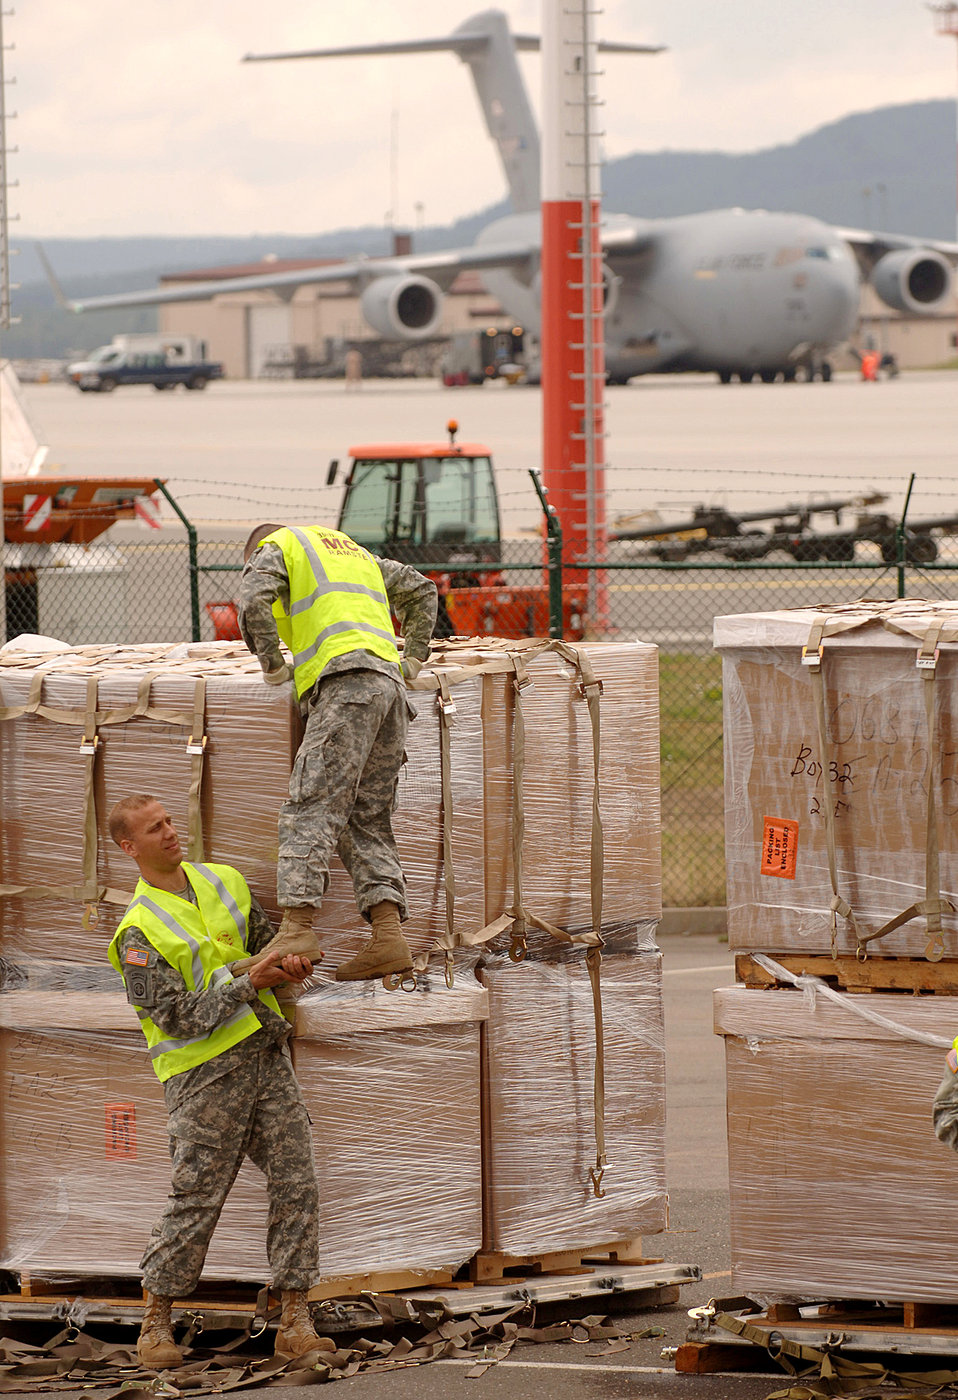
Ramstein members deliver aid to Georgia

Army Spc. Alexandro Saldana gets a lift from Army Staff Sgt. Jeremiah Wolf before attaching netting to 18 pallets of sleeping bags and cots bound for the Republic of Georgia Aug. 15 at Ramstein Air Base, Germany. The Soldiers are assigned to the 66th Transportation Co., 39th Transportation Battalion based at nearby Kleber Kasserne.